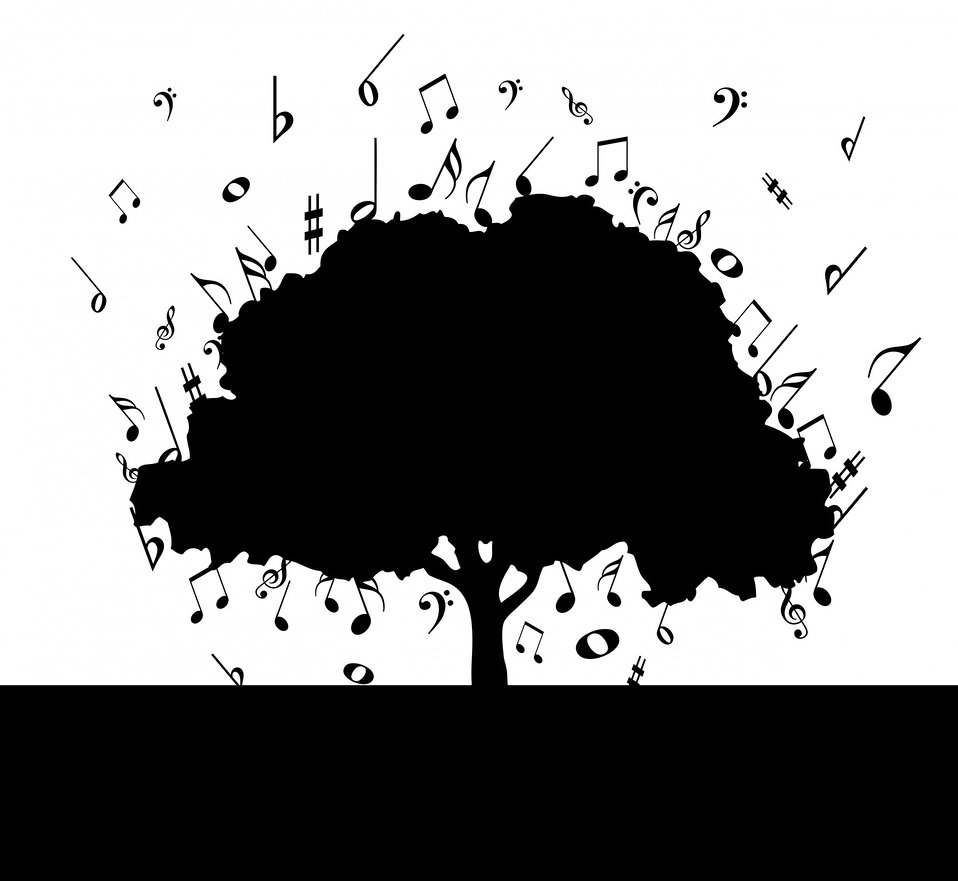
Musical notes tree black silhouette illustration for.